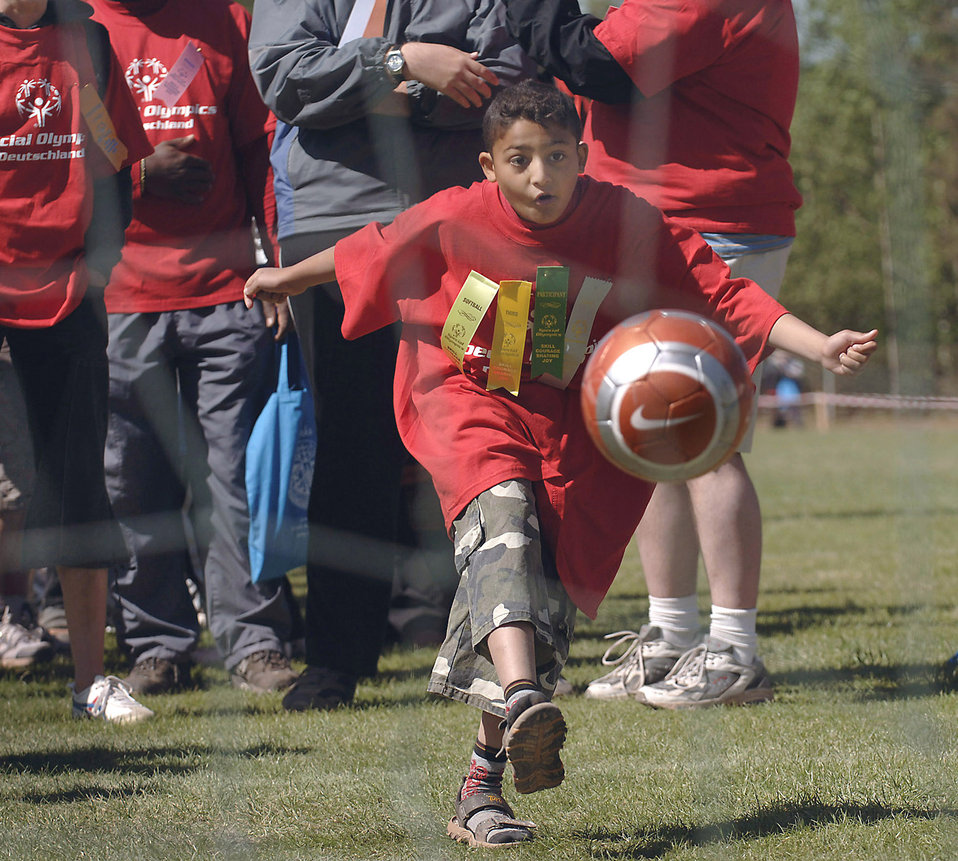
For the gold

Stefan Gauder of Heidelberg, Germany, takes a shot on goal during the 2007 Special Olympic games May 2. German and American volunteers from the Kaiserslautern military community assisted more than 750 Special Olympians who competed in the 24th annual games here.